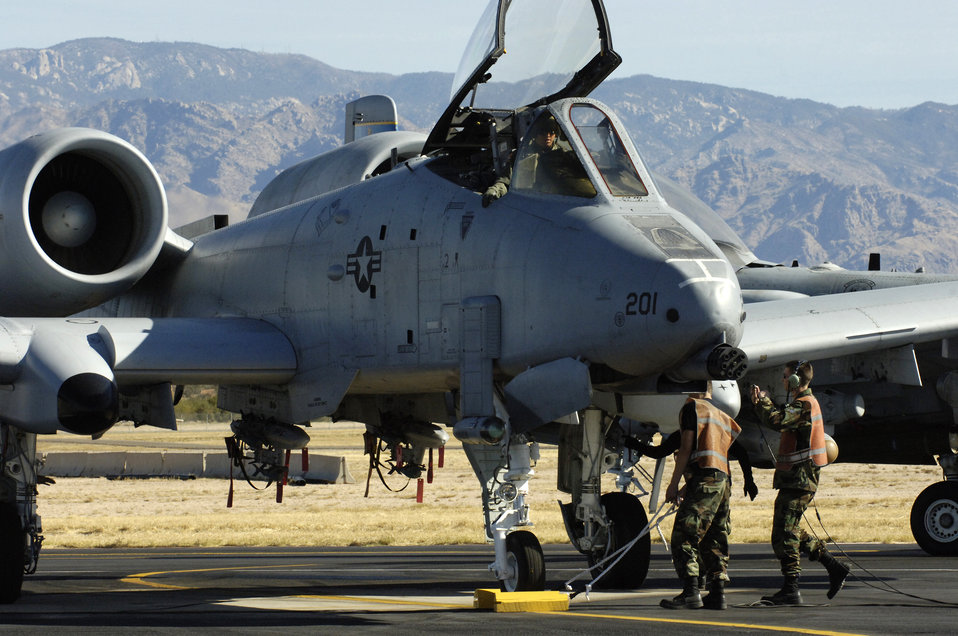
Thunder alley

An A-10 Thunderbolt II sits on the end of the runway as maintainers perform pre-flight inspections at Davis-Monthan Air Force Base, Ariz., Thursday, March 23, 2006, as part of the 2006 Hawgsmoke competition. This year marks the 30th anniversary of the